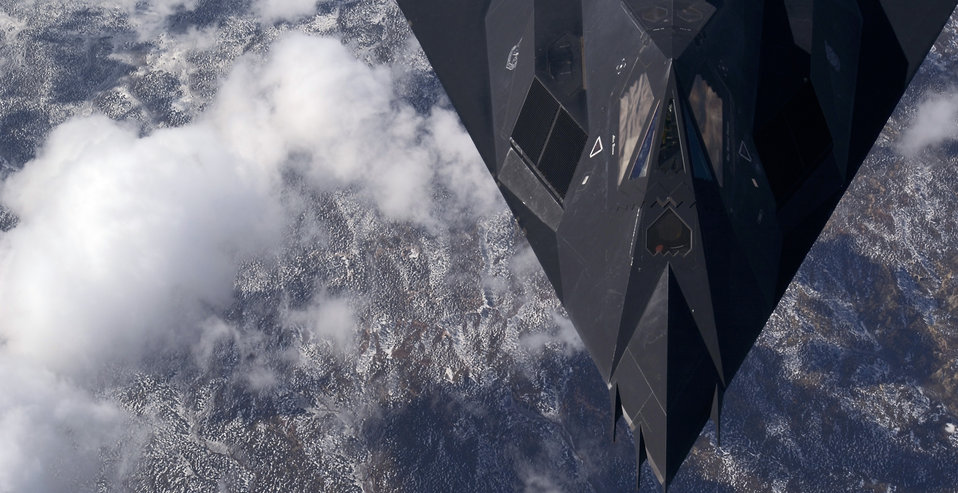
High above the mountain top

OVER NEW MEXICO - An F-117A Nighthawk from Holloman Air Force Base, N.M. flies high over the mountains during a training mission.